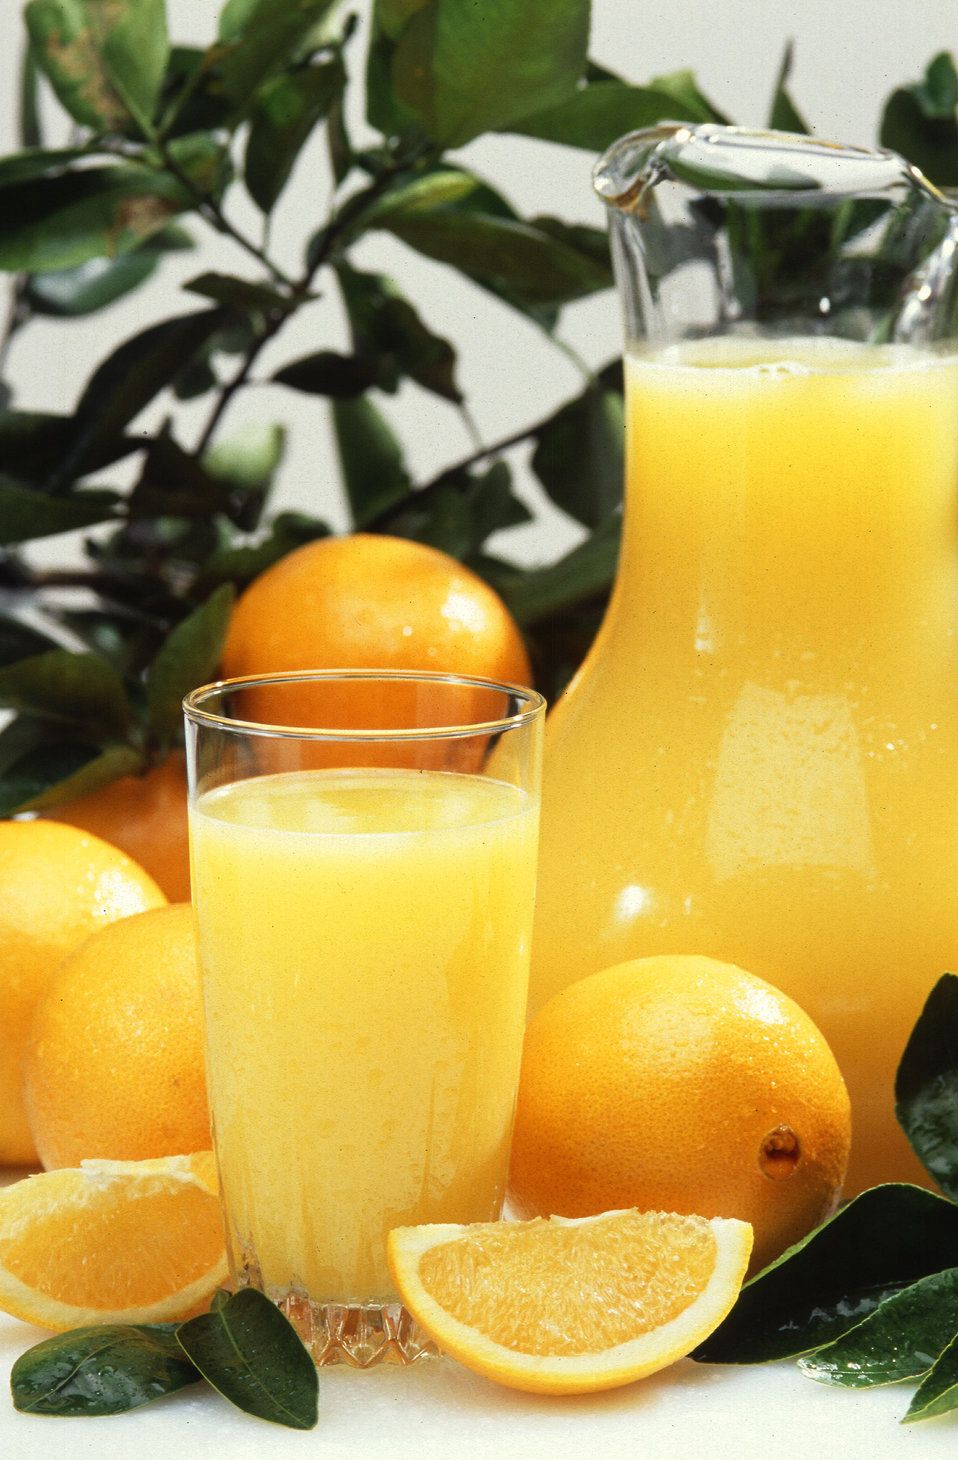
Fifty years ago, frozen orange juice was just a flavorless commercial flop. The only orange juice you could get back then was either squeezed from fresh oranges, mixed from a relatively tasteless concentrate, or poured from a can-and it tasted like a can. Florida Citrus Commission director of research Louis G. MacDowell had an idea. He suggested that adding a little single-strength fresh juice, or 'cut-back,' to slightly over concentrated orange juice might restore the flavor and aroma lost during vacuum evaporation. He presented the idea to U.S. Department of Agriculture (USDA), Agriculture research Service (ARS), researchers, the folks with the equipment and expertise to help develop the idea. Not only did it work but the vastly improved concentrate could be easily frozen. And so began the success story that's now such a familiar sight on the breakfast table-frozen concentrated orange juice.